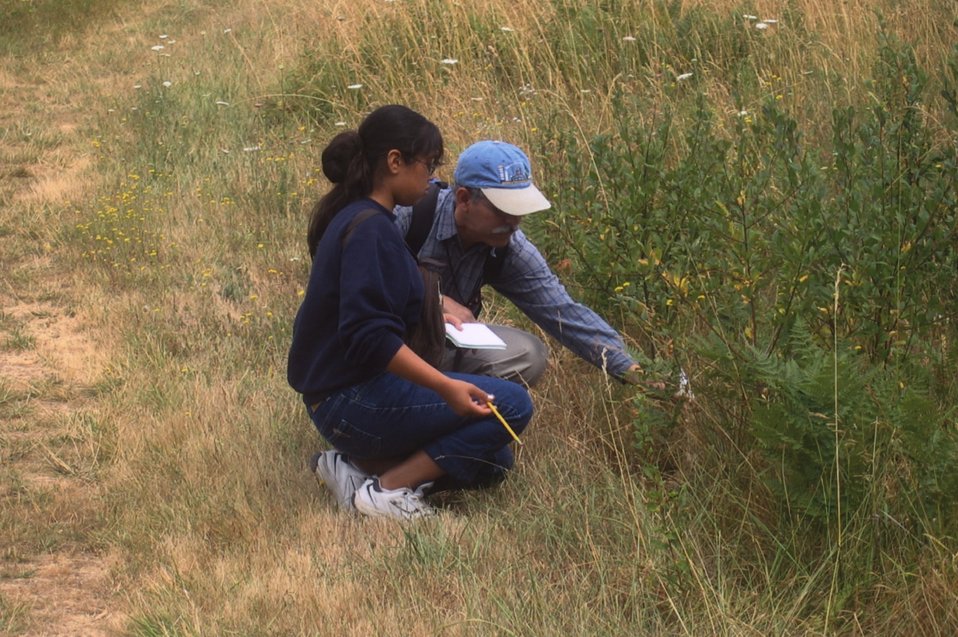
Jose instructing a student at ICYI camp. Tiffany Dashiell, State Office BLM at Work1